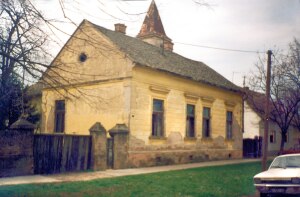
Calvinist church in Nikinci village, Vojvodina, Serbia.